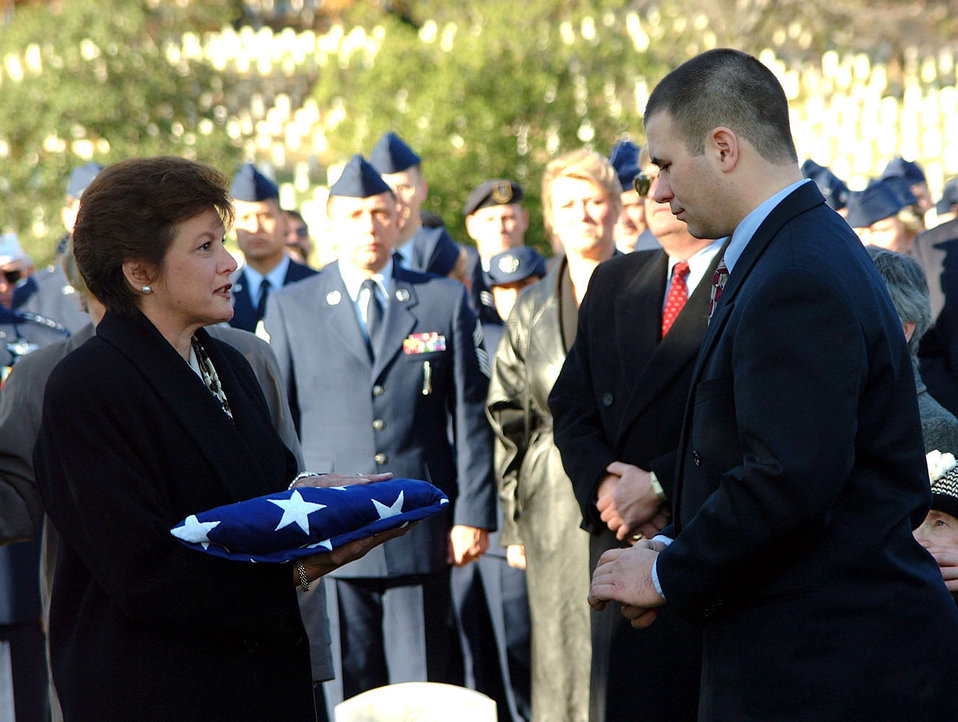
Spirit of John L. Levitow

ARLINGTON NATIONAL CEMETERY -- U.S. Air Force Medal of Honor receipient John L. Levitow was buried Nov. 17, with full military honors here. Levitow, one of only 16 airmen awarded the Medal of Honor for exceptional heroism during wartime, died at his home in Connecticut Nov. 8, 2000, after a lengthy battle with cancer. Levitow, the lowest ranking airman to earn the medal, received the honor as a result of an incident on Feb. 24, 1969. At that time, the airman first class served as loadmaster aboard a severely damaged AC-47 gunship flying a mission over Long Bihn, South Vietnam. After Levitow left the Air Force he worked in the field of veteran's affairs for more than 22 years. A C-17 Globemaster III was named